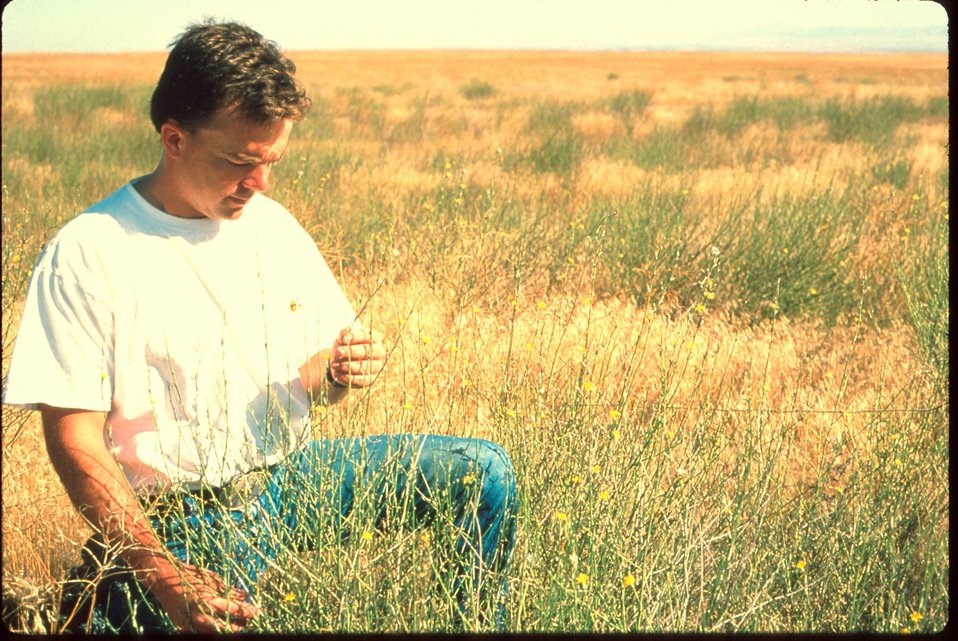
Dan Woodruff looking at Rush Skeleton Weed Idaho vegetation Plants in BLM